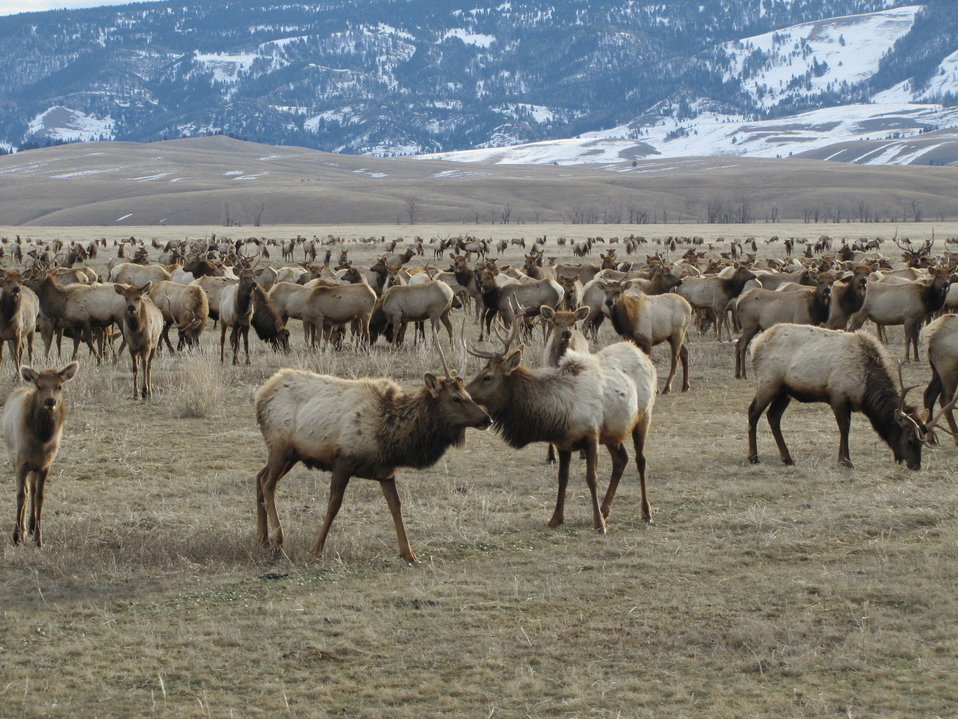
Can You Find Them All?

A variety of antlers can be seen in this photo, taken in late March. Not many large pairs of antlers can be seen in the picture; the larger bulls generally lose theirs earlier in the month. Challenge yourself to find spikes, raghorn sets, and, by using the zoom tool, perhaps signs of elk with antlers that have already dropped.